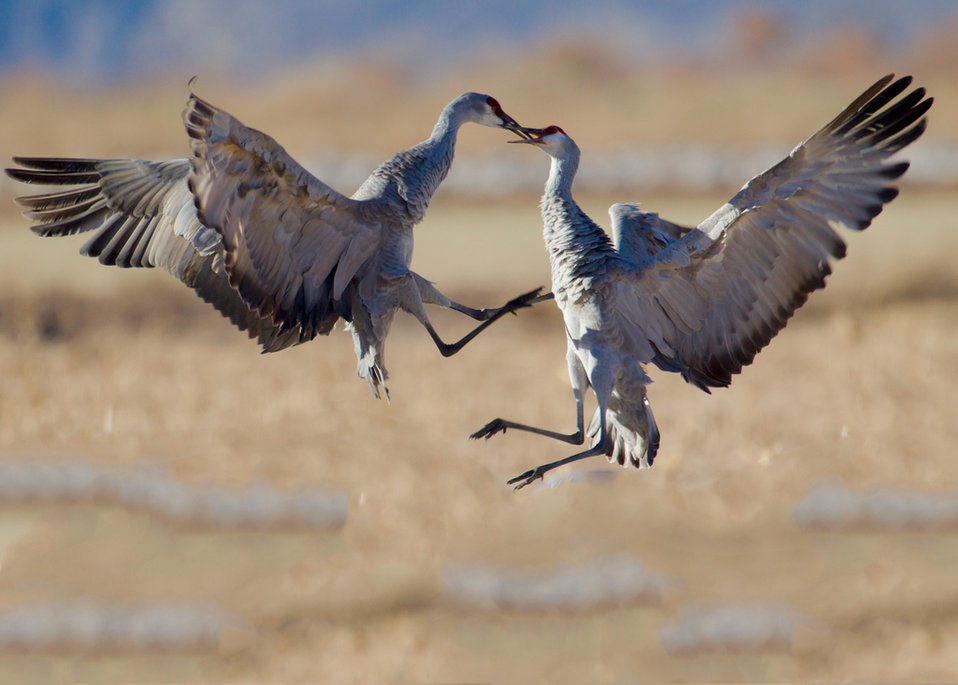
sandhill cranes dance

Sandhill cranes are known for their spectacular courtship dance.
Bosque del Apache National Wildlife Refuge, NM
Nov. 21, 2010